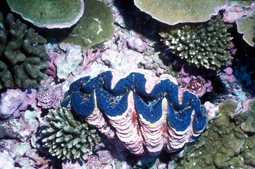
Coral - Marine National Monuments